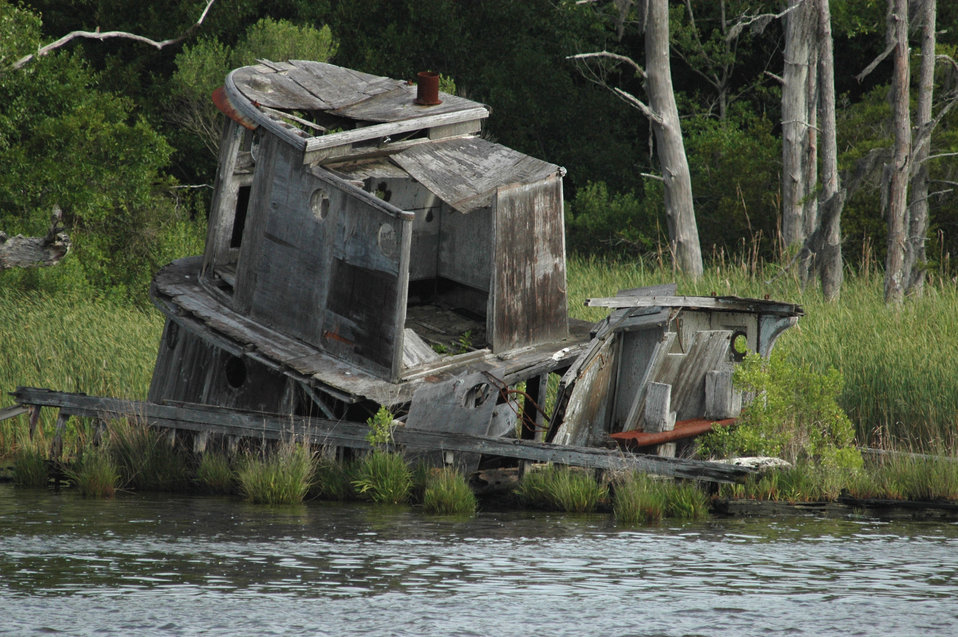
A derelict along the Cape Fear River.